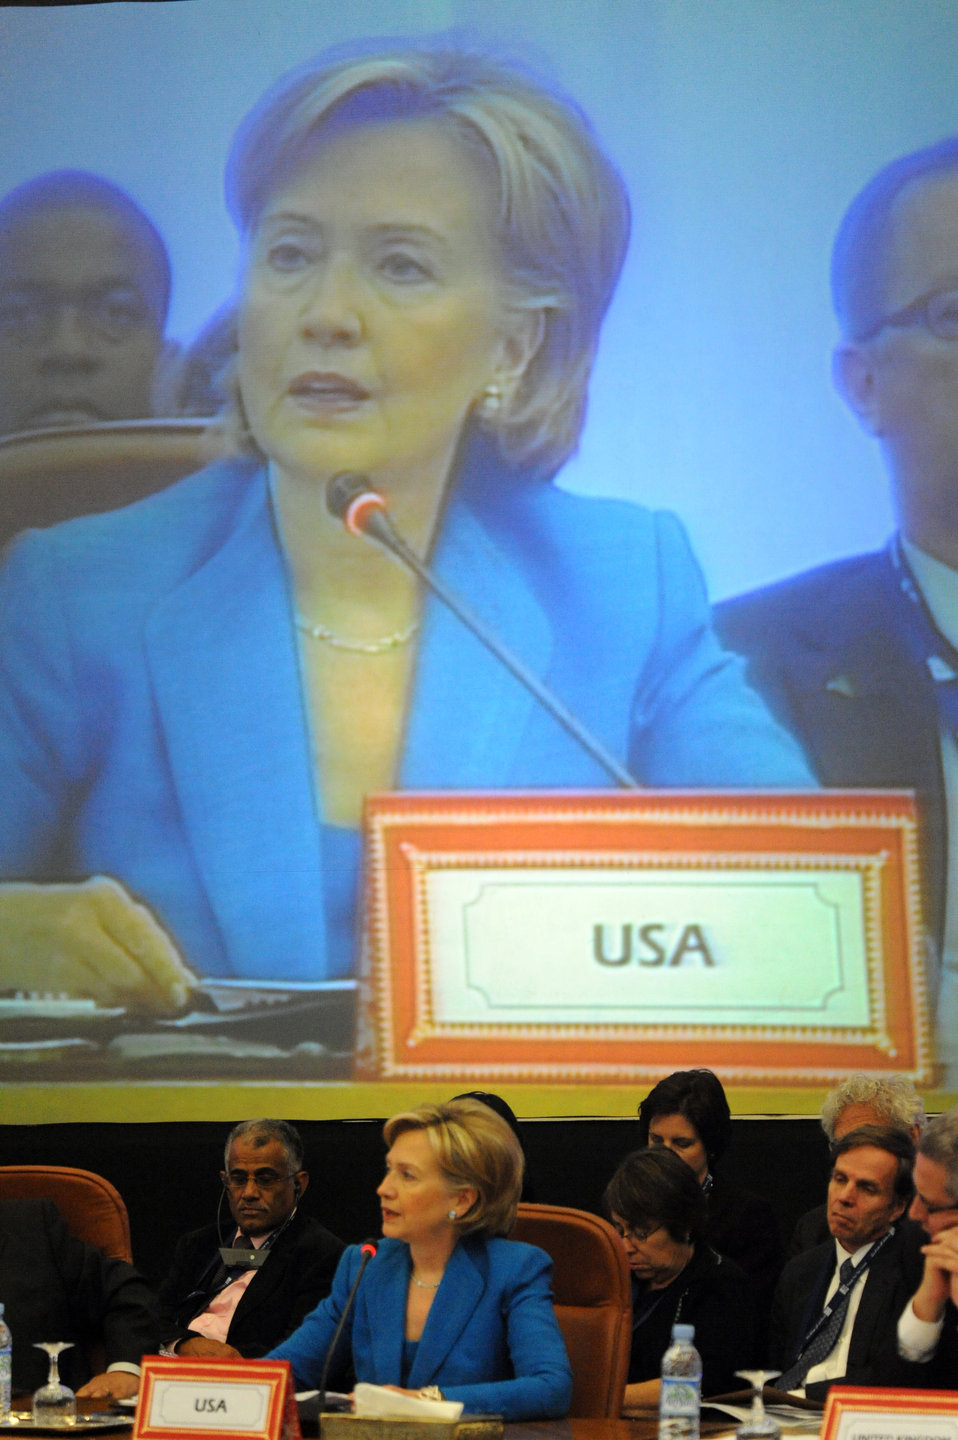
Secretary Clinton Attends 6th Forum for the Future

U.S. Secretary of State Hilllary Rodham Clinton attends the 6th Forum for the Future in Marrakesh, Morocco November 3, 2009.